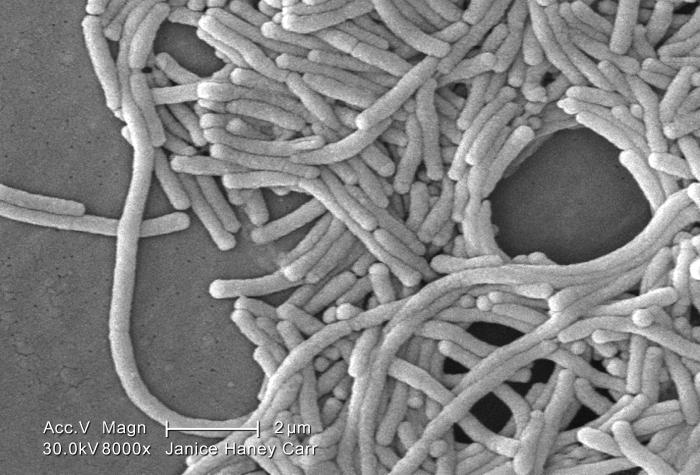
Under a moderately-high magnification of 8000X, this scanning electron micrograph (SEM) depicted a large grouping of Gram-negative Legionella pneumophila bacteria. Please see PHIL 11092 through 11152 for additional SEMs of these organisms, specifically PHIL 11152 for a colorized version of this image. Of particular importance, is the presence of polar flagella, and pili, or long streamers, which due to their fragile nature, in some of these views seem to be dissociated from any of the bacteria. For a better view of these bacterial appendages, see the colorized version.